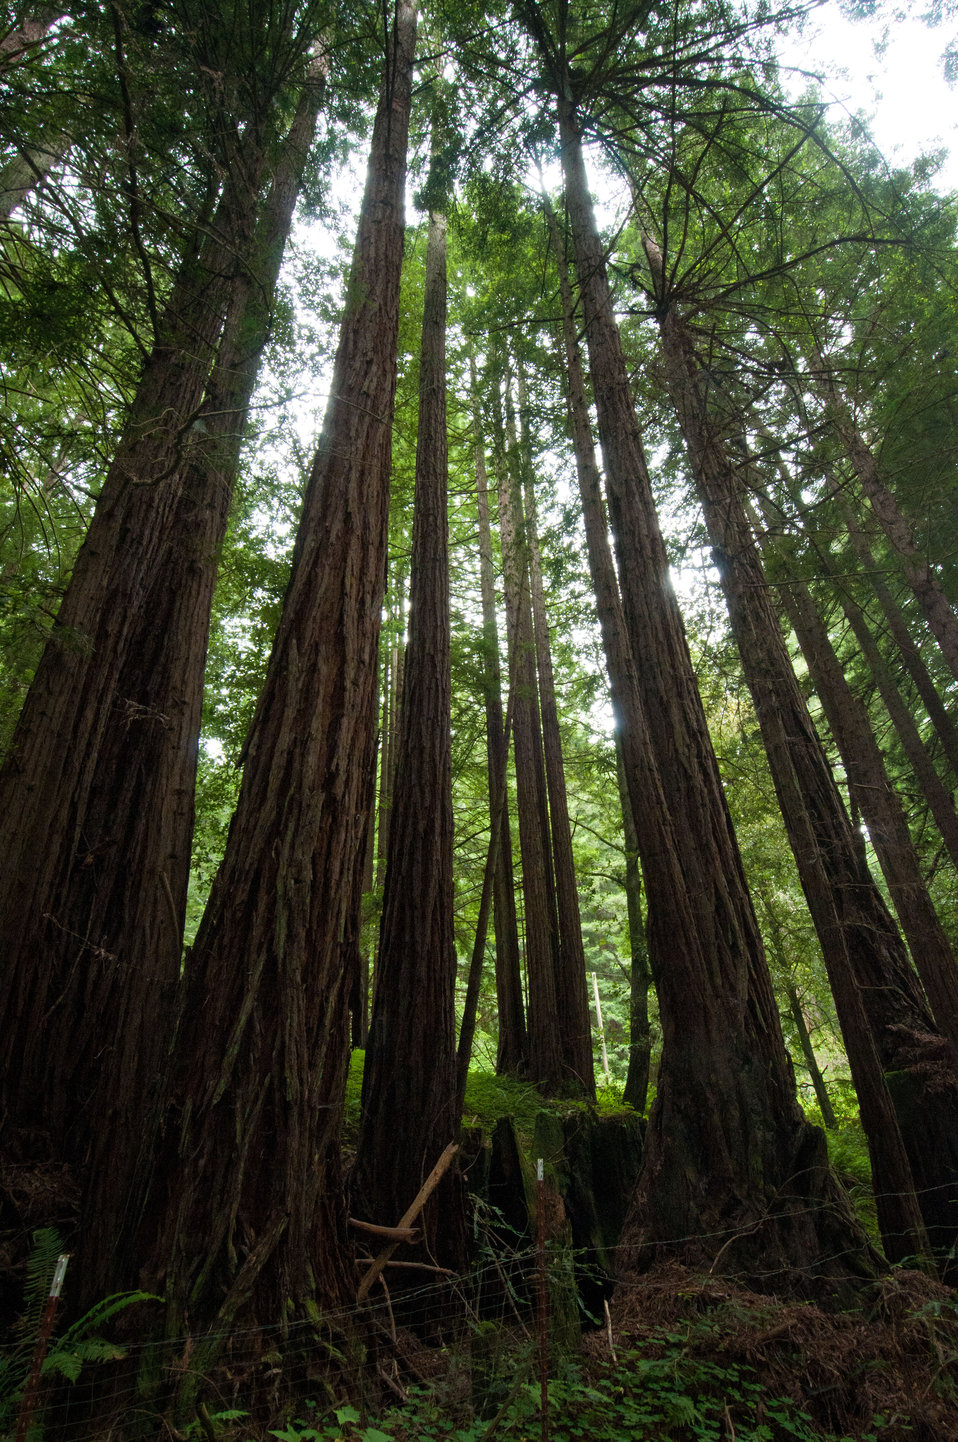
Cathedral growth redwood trees in a private forest in Santa Cruz County, CA, on Friday, June 17, 2011. Cathedral trees are a group of redwoods that grow in a circle around a host stump or tree, from which they sprouted. Assisting landowners when they want help in the management of their private forest is a factor in the America’s Great Outdoors Initiative (AGO).